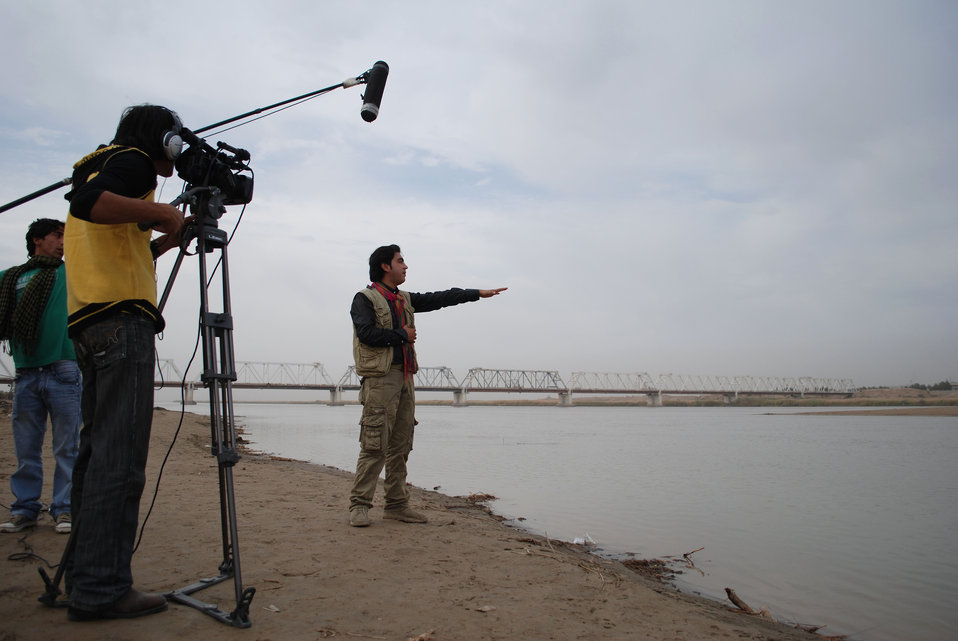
'On the Road' in Balkh Province